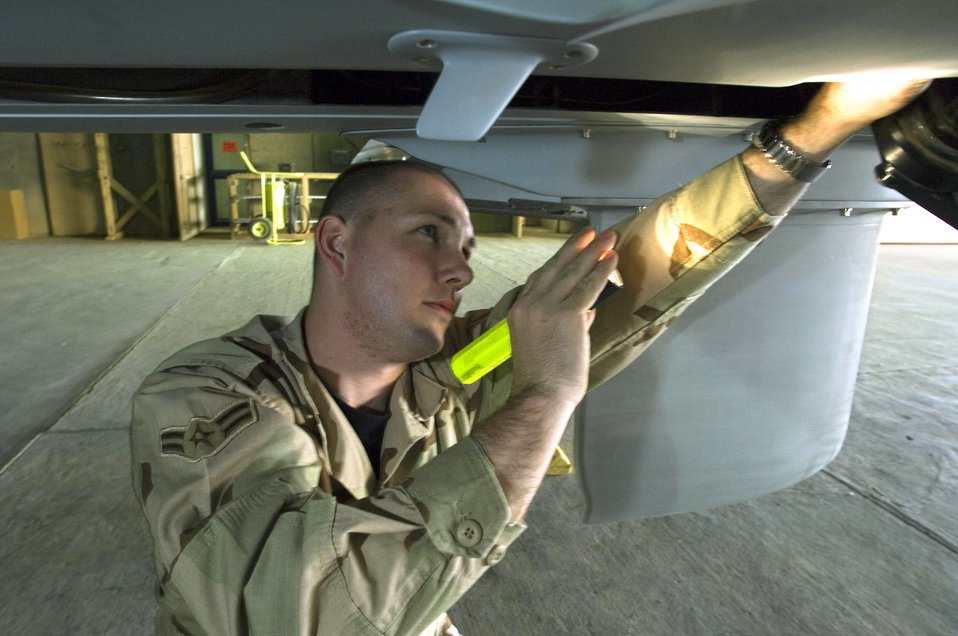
UAV mission

BALAD AIR BASE, Iraq (AFPN) -- Airman 1st Class Dathen Schori inspects an unmanned aerial vehicle. Airman Schori is an avionics specialist with the 332nd Expeditionary Aircraft Maintenance Squadron's Aircraft Maintenance Unit.